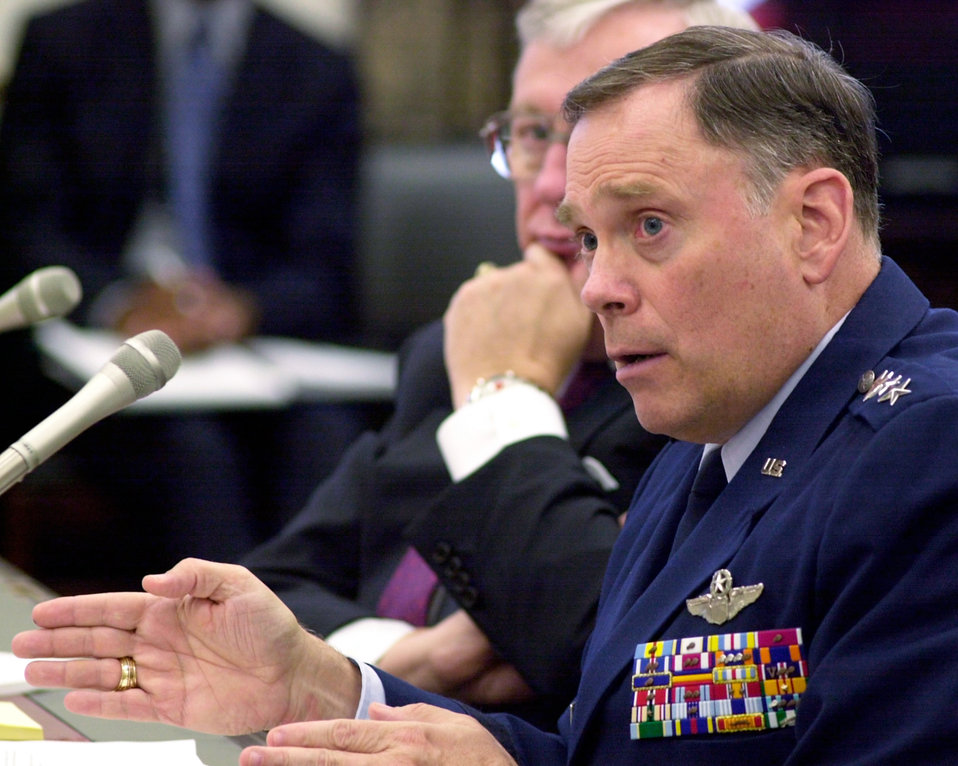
Jumper answers

WASHINGTON -- Secretary of the Air Force Dr. James G. Roche looks on as Air Force Chief of Staff Gen. John P. Jumper answers questions during a hearing of the House Appropriations Committee subcommittee on defense on March 19.